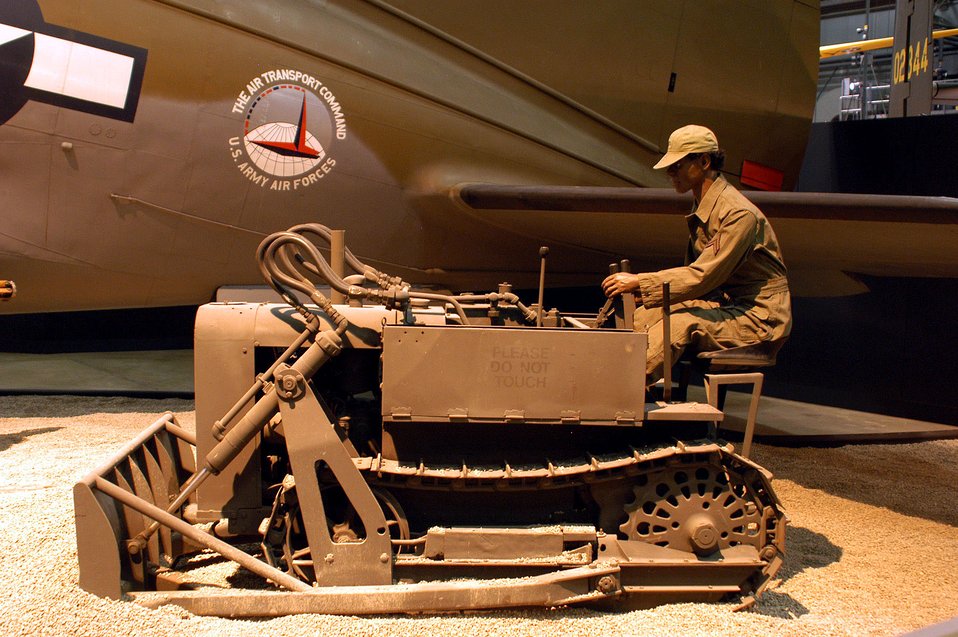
Museum celebrates Black History Month

The Engineer Aviation Battalion exhibit near the Curtiss C-46D at the National Museum of the U.S. Air Force is shown. The National Museum of the U.S. Air Force's celebration of Black History Month in February contains several exhibits in the Air Power Gallery feature contributions from prominent black Airmen in Air Force history.